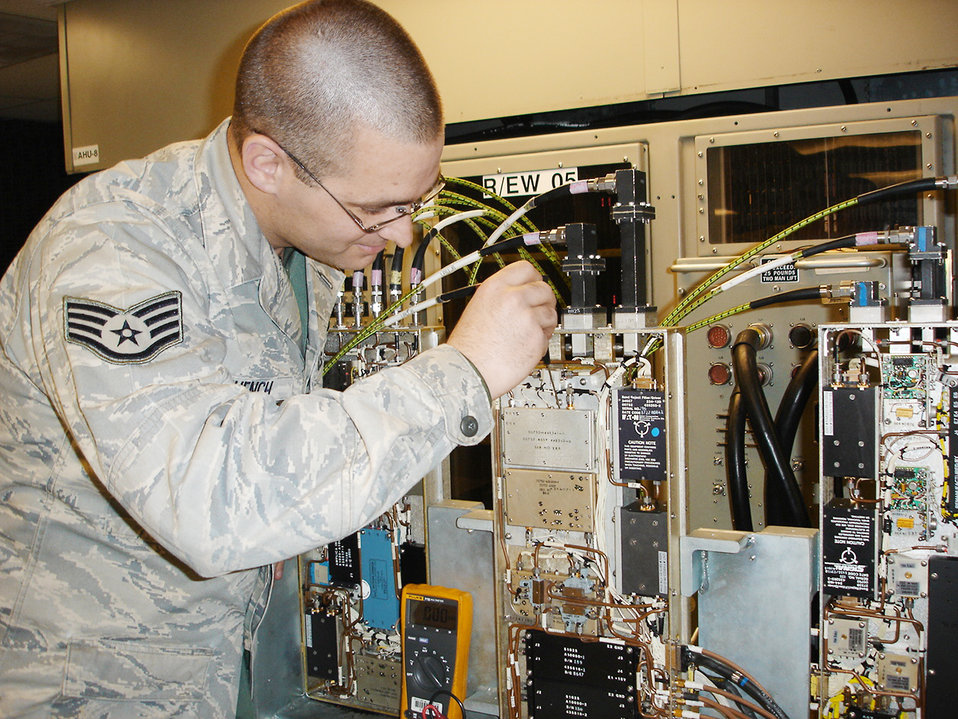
RNI initiative improves B-1B maintenance

Staff Sgt. Karl Muench Jr. makes frequency adjustments to a B-1B Lancer Band 4-8 receiver mounted on a test station. The Band 4-8 receiver recently underwent a Repair Network Integration proof-of-concept live test that demonstrated the ability of the repair network to re-optimize and balance capacities to meet a workload requirement of 15 serviceable receivers within a 90-day period. Sergeant Muench is assigned to the 7th Component Maintenance Squadron at Dyess Air Force Base, Texas.